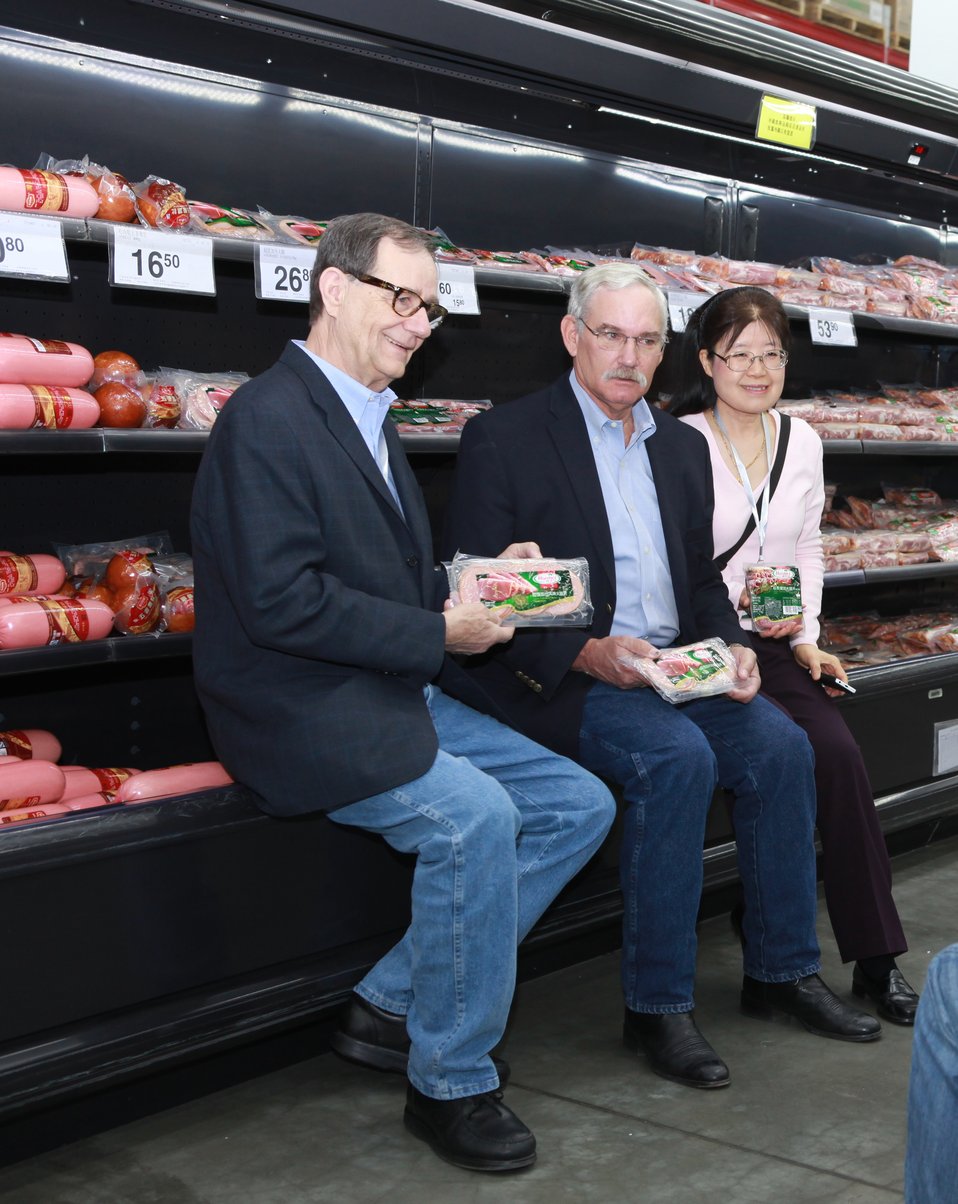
(L to R) Minnesota Department of Agriculture Commissioner Dave Frederickson, U.S. Department of Agriculture (USDA) Farm and Foreign Agricultural Services (FFAS) Under Secretary Michael Scuse, and Minnesota Department of Agriculture Chief Economist Su Ye sit in front of a meat section at a Metro grocery store in China on May 6, 2014. Metro is a leading grocery retail chain with locations across china.